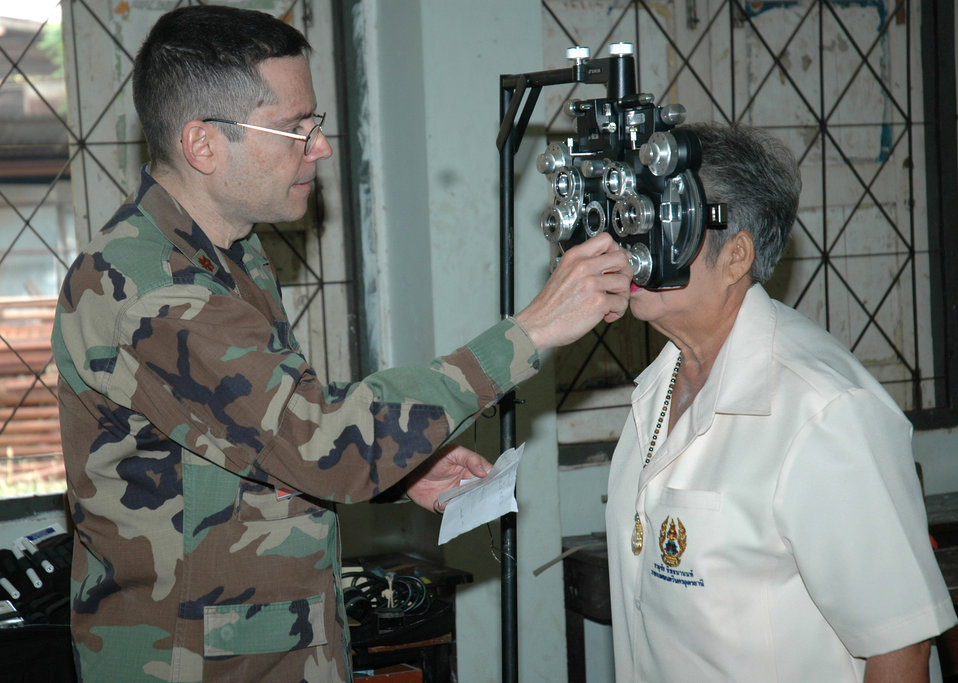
Air Force team performs goodwill mission in Thailand

Maj. (Dr.) Carlos Cebollero conducts a refraction test on a patient Feb. 6 during a goodwill visit to the Thairat 72 School in Udon Thani,Thailand. This medical-dental goodwill mission is the second civil-action project in Thailand as part of exercise Cope Tiger 2007. Major Cebollero is an optometrist with the 374th Medical Group at Yokota Air Base, Japan.